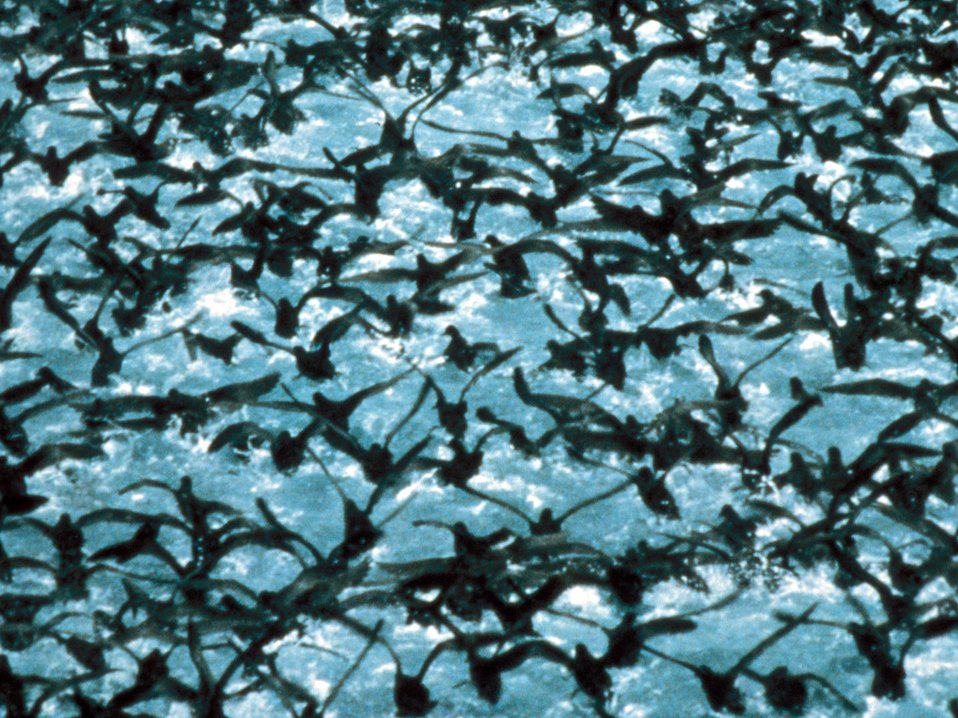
Unimak pass shearwater flock, Alaska Maritime NWR

A flock of migrating shearwaters fills the sky at Unimak Pass on the Alaska Maritime National Wildlife Refuge. (USFWS)